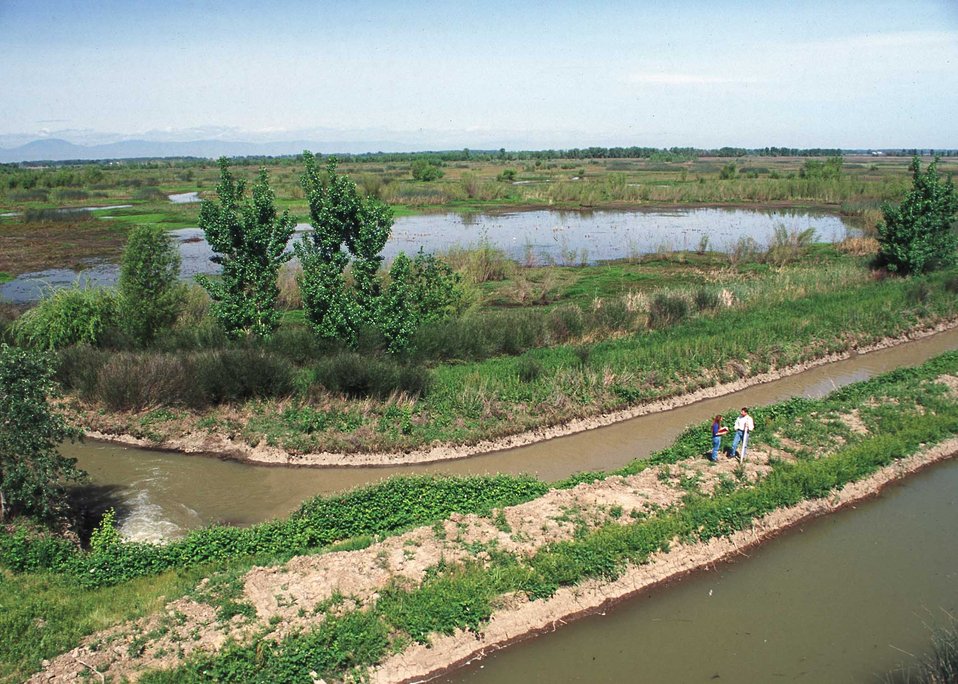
Jessica Groves near wildlife habitat in Butte County, CA.